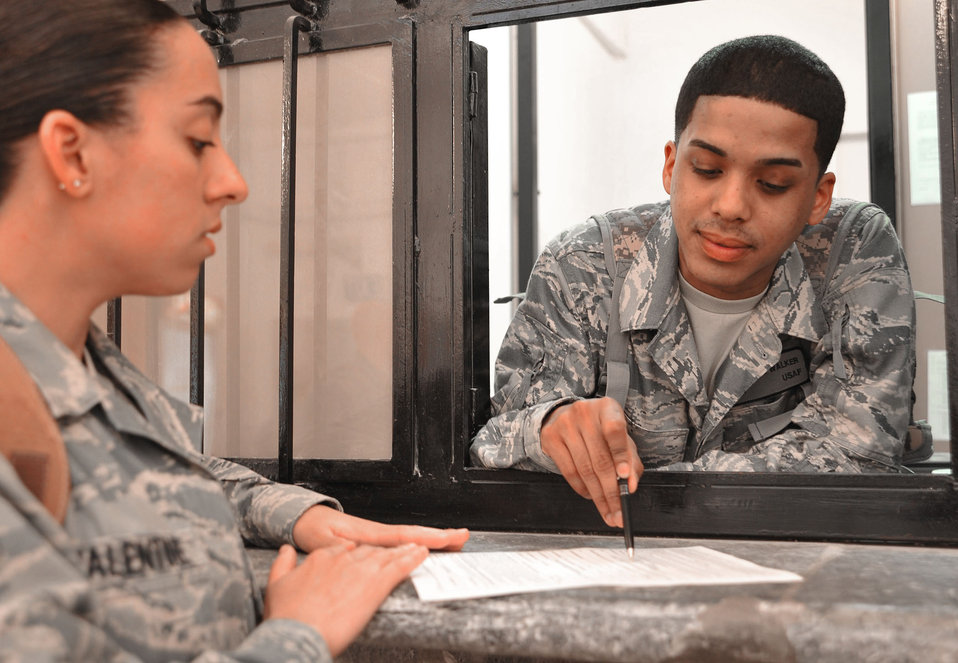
Airman delivers cash, military pay

Senior Airman Jon-Nicos Walker helps a customer fill out paperwork April 12, 2011, at Contingency Operating Site Marez, Iraq. Airman Walker is an Air Force Financial Management Det. 2 military pay technician.